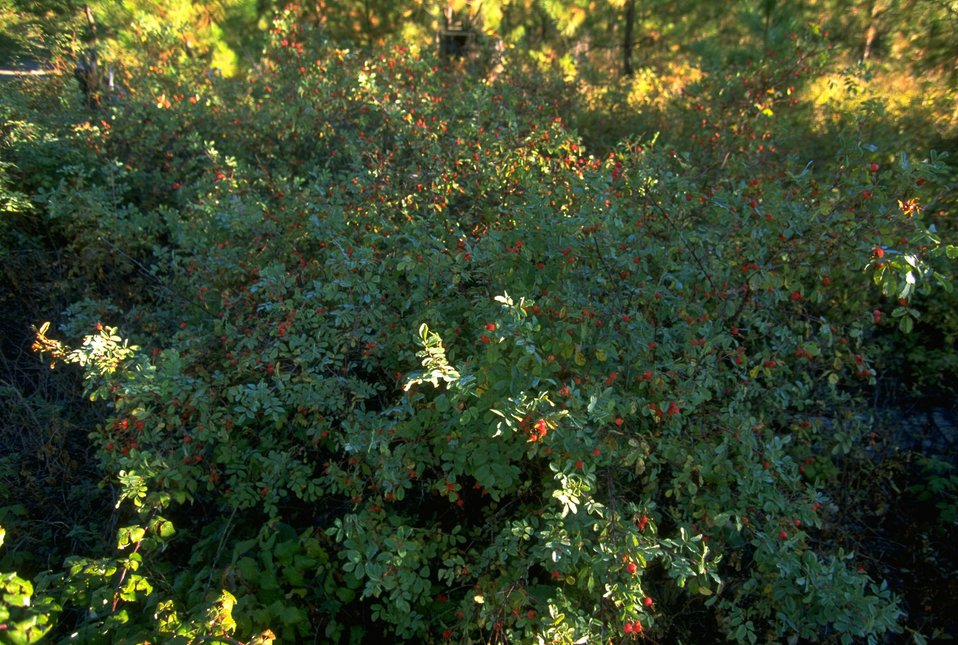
Riparian vegetation along the Blackfoot River